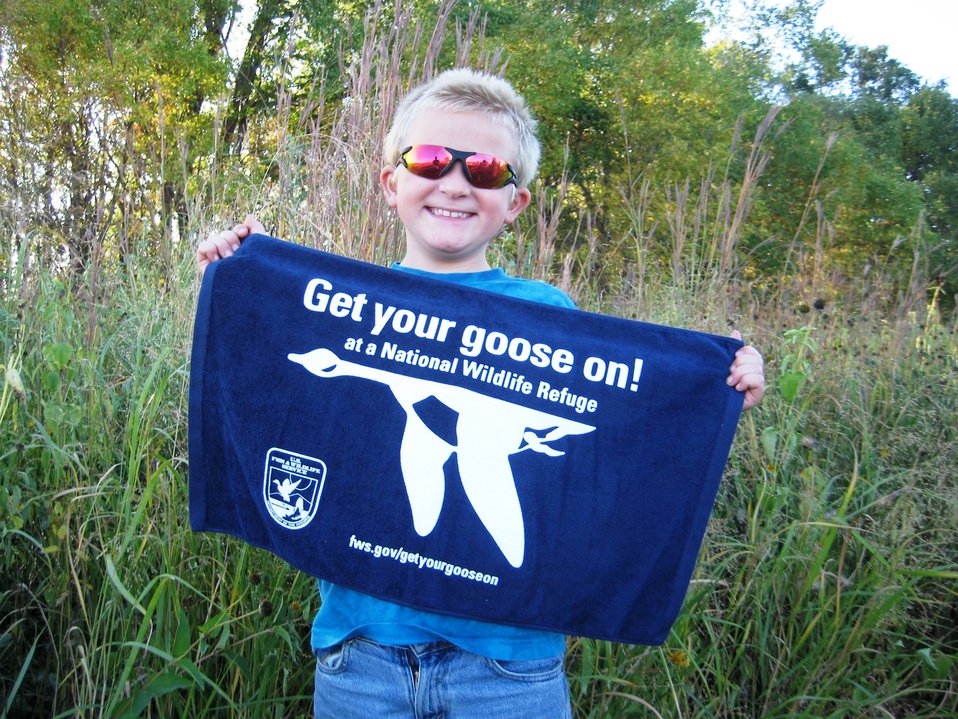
Get Your Goose On!

Taken at Tewaukon National Wildlife Refuge.